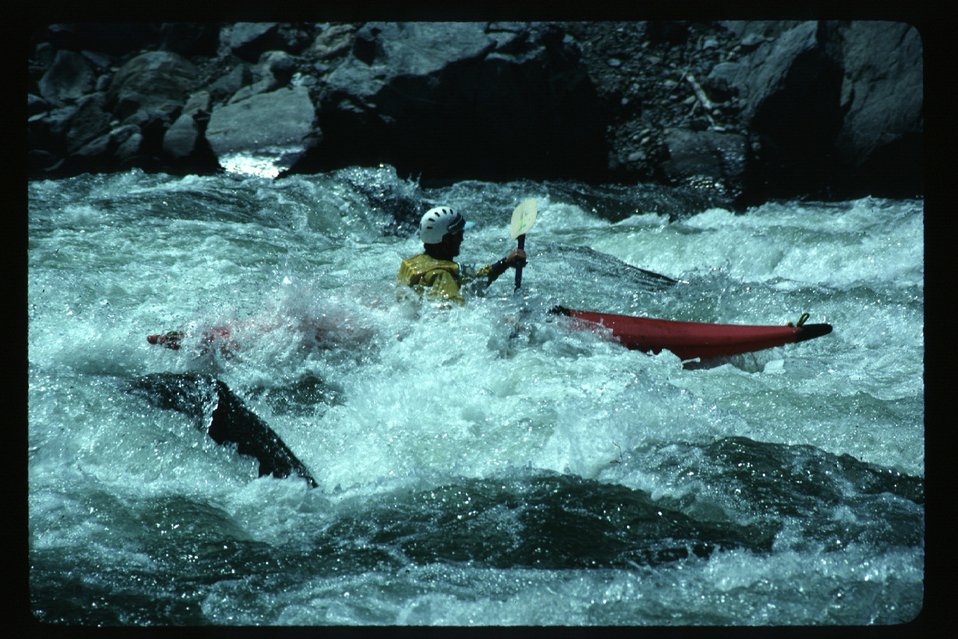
Kayaker in white water Kayaking Four Rivers Field Office LSRD Lower Snake River District